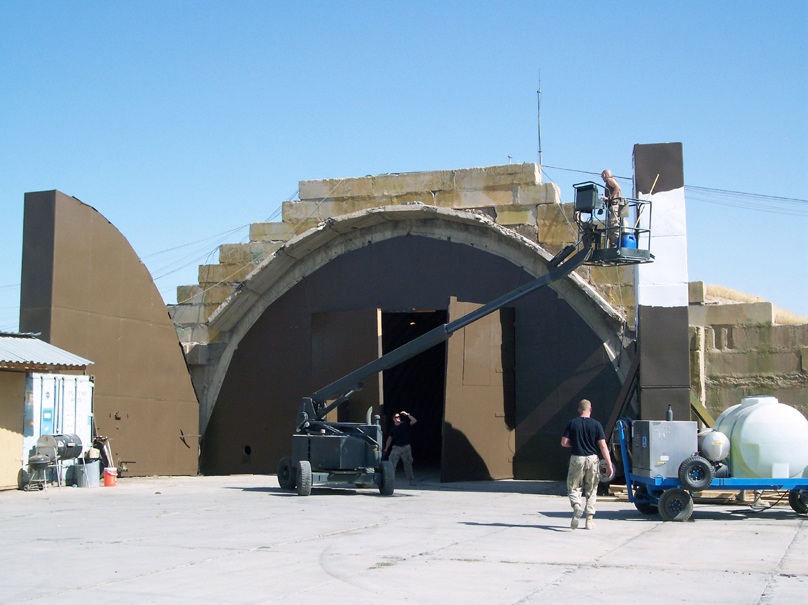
Squadron 'cleans house' to build new home

KARSHI-KHANABAD AIR BASE, Uzbekistan -- Airmen from the 41st Expeditionary Electronic Combat Squadron are turning an old hardened aircraft shelter into a new home. The former Soviet-era shelter had been used as a storage area and had been deteriorating for some time.